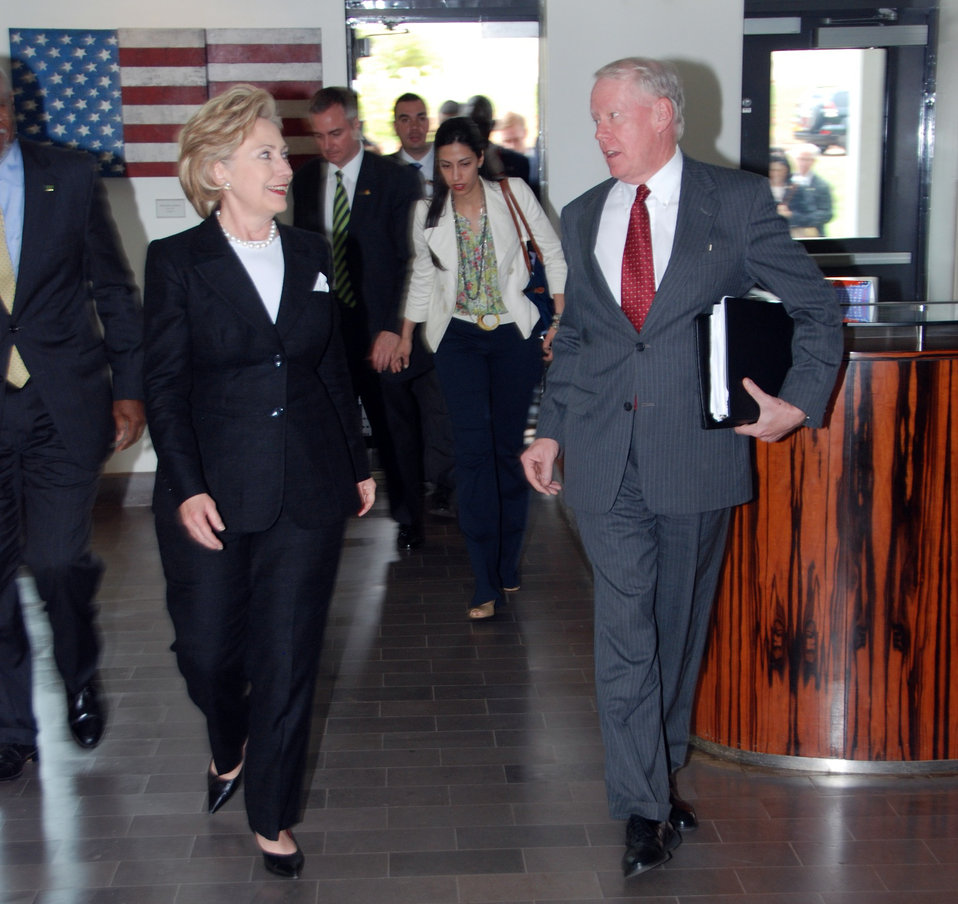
Secretary Clinton Arrives at U.S. Embassy in Kenya

U.S. Secretary of State Hillary Rodham Clinton arrives at the U.S. Embassy with U.S. Ambassador to Kenya Michael E. Ranneberger in Nairobi, Kenya August 6, 2009.